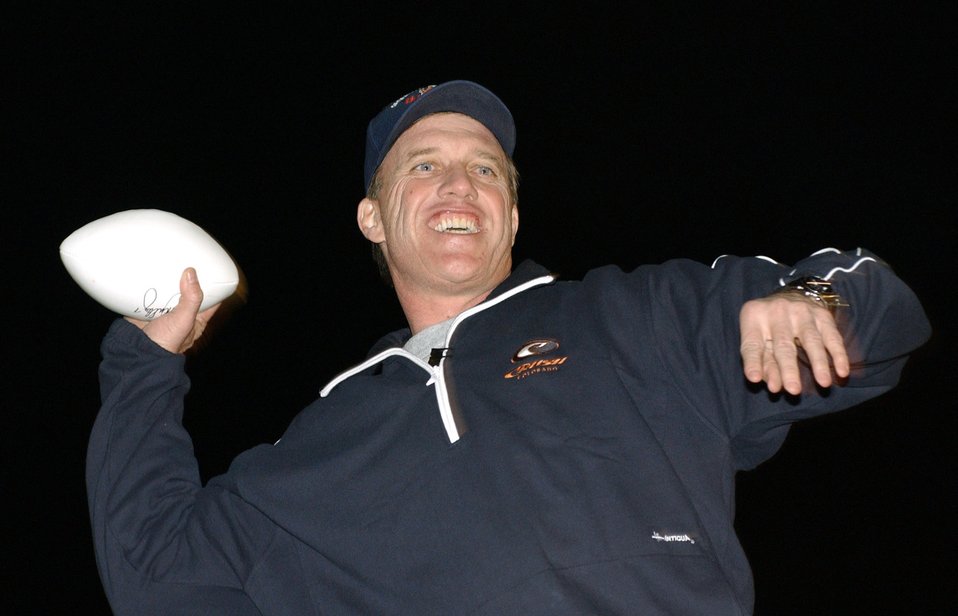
Balad Airmen welcome USO tour

BALAD AIR BASE, Iraq -- John Elway tosses footballs to the crowd during the Chairman's United Service Organizations Holiday Tour here Dec. 14.